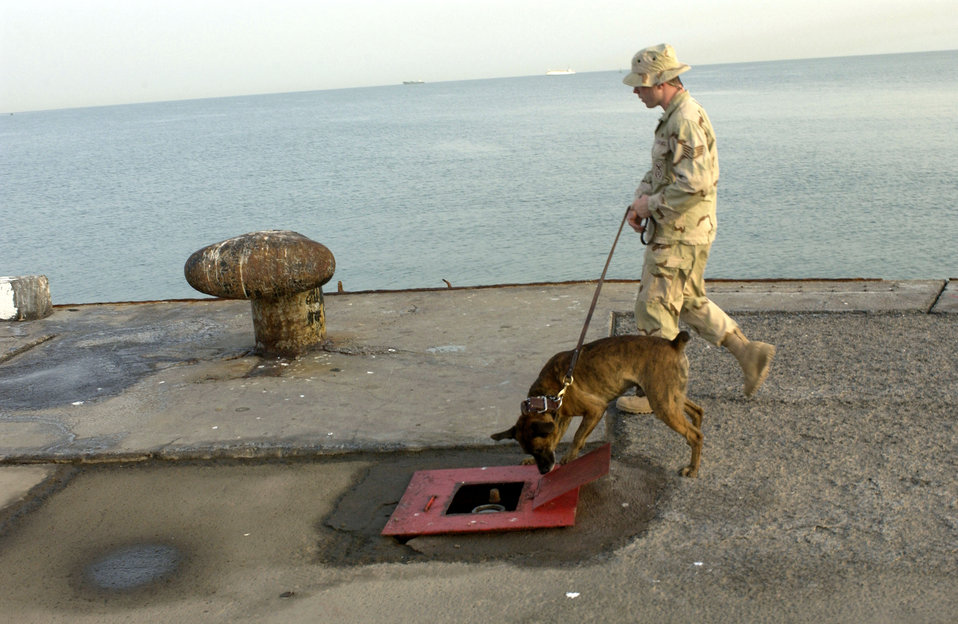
Pier sweep

Staff Sgt. David Helmbrecht walks with his military working dog Borek for a sweep of Pier 11 in Djibouti City, Djibouti, on July 15. The team was checking for explosives before the arrival of the USNS Saturn, which was docking for fuel and supplies. Sergeant Helmbrecht and Borek are deployed from Grand Forks Air Force Base, N.D.